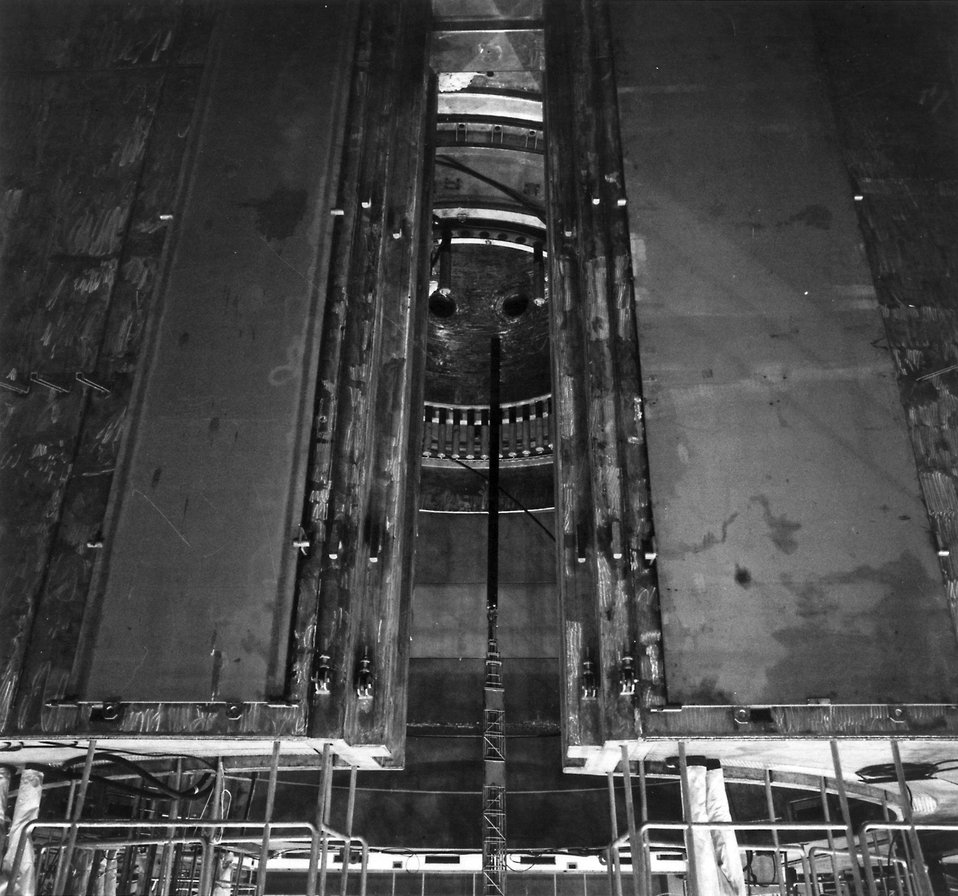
The first fuel bundle is moved to the reactor vessel from storage for loading into the nuclear reactor February 27, 1974, at the Duane Arnold Energy Center Near Palom Iowa. Circa 1974.